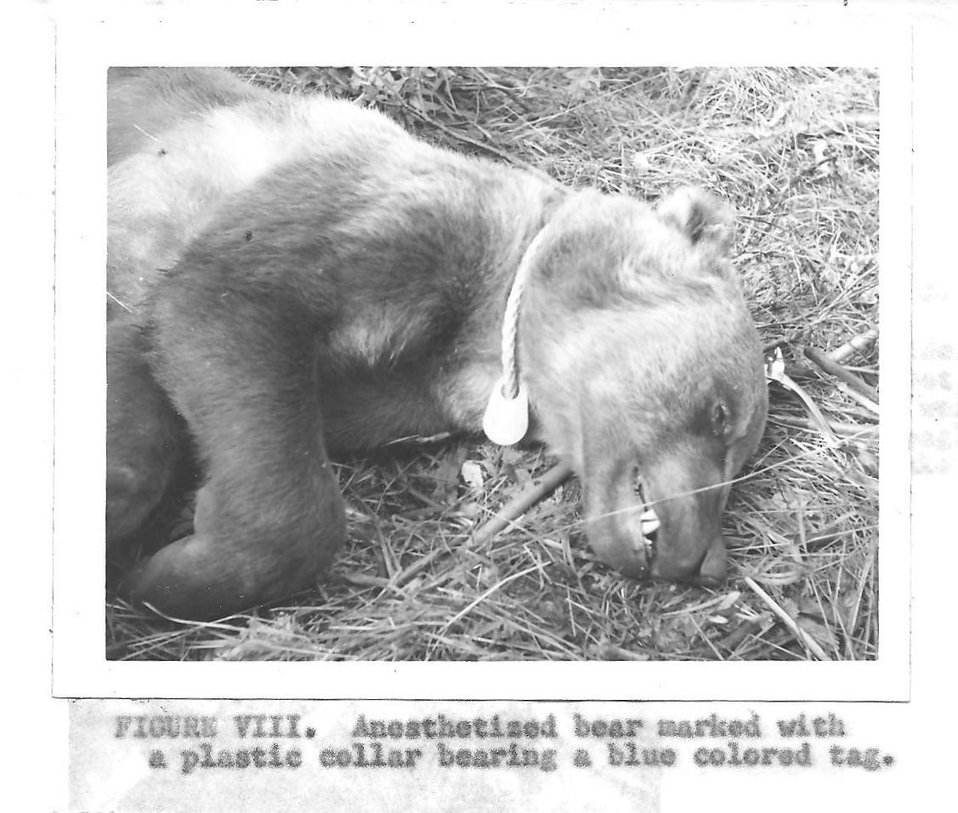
(1961) Anesthetized Bear

Credit: USFWS

Source and Contact: Kodiak National Wildlife Refuge